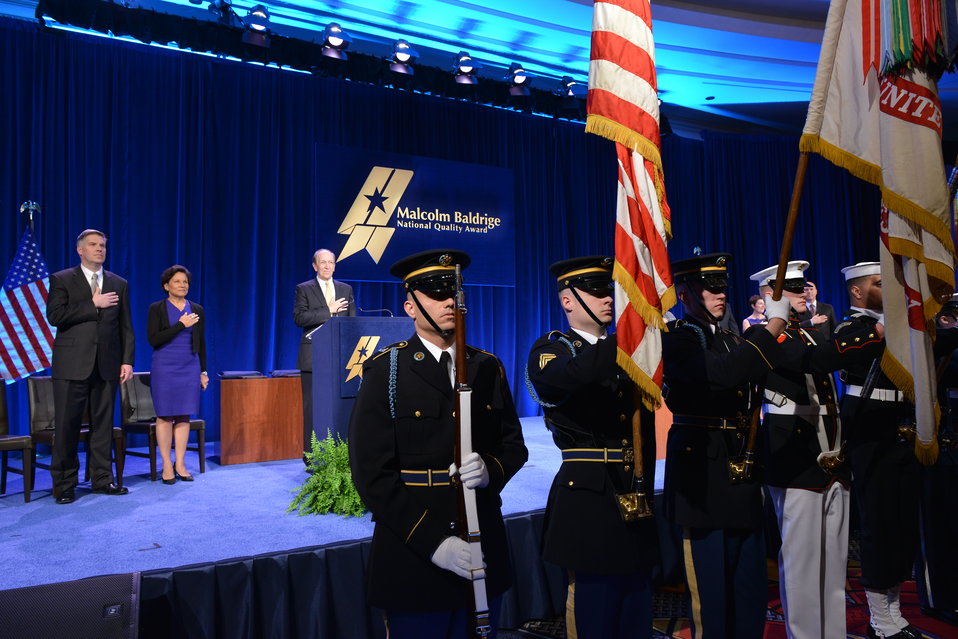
National Anthem and Presentation of Colors, 2013 Baldrige Award Ceremony, April 6, 2014

Under Secretary for Standards and Technology and Director, National Institute of Standards and Technology Patrick Gallagher; Secretary of Commerce Penny Pritzker, Foundation Chair George Benson and US Joint Service Color Guard, 2013 Baldrige Award Ceremony, April 6, 2014